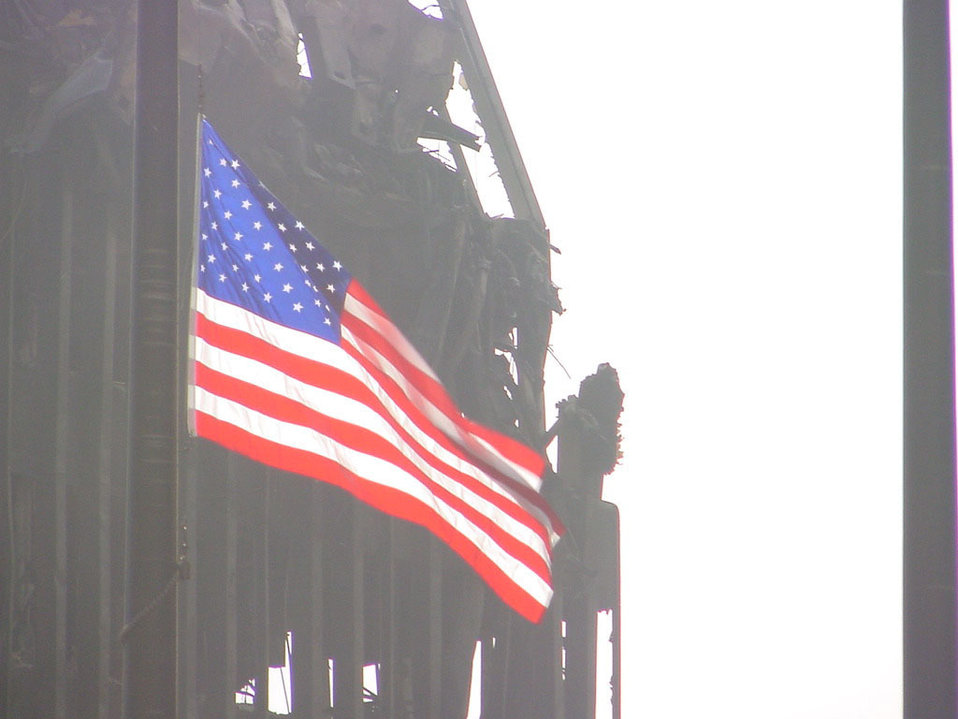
WTC damage

NEW YORK -- The United States flag is cast against a backdrop of destruction caused by the attack on the Twin Towers of the National World Trade Center here Sept. 11. Air Force airmen joined other workers in helping to clear the rubble and search for survivors.